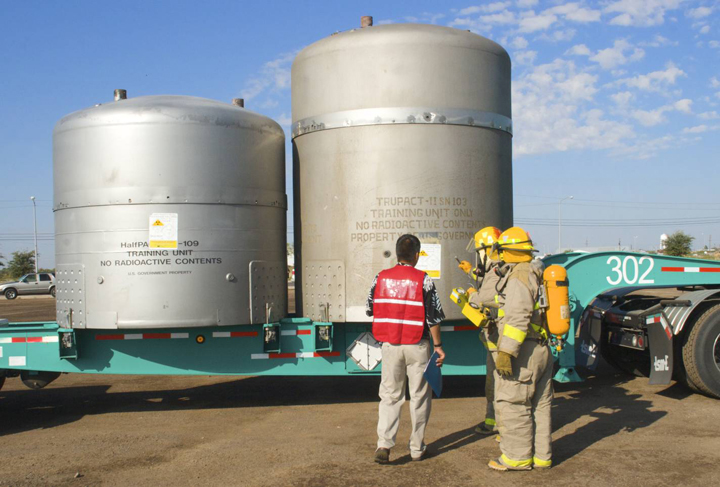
WIPP Practice Exercise

Firefighters practice responding to a simulated incident involving a WIPP shipment during an exercise earlier this year.